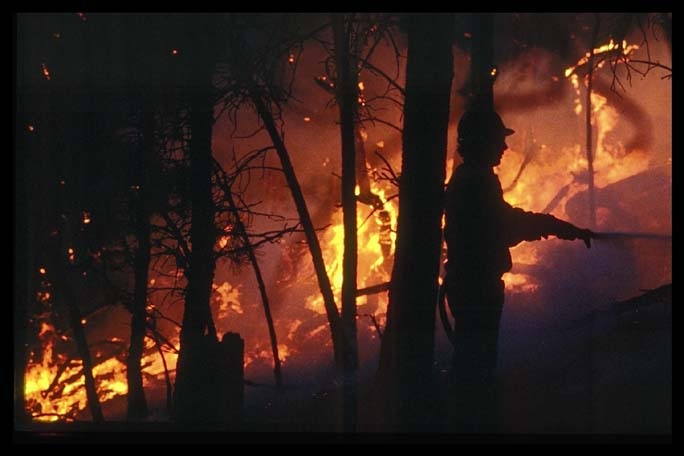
Wildland firefighter